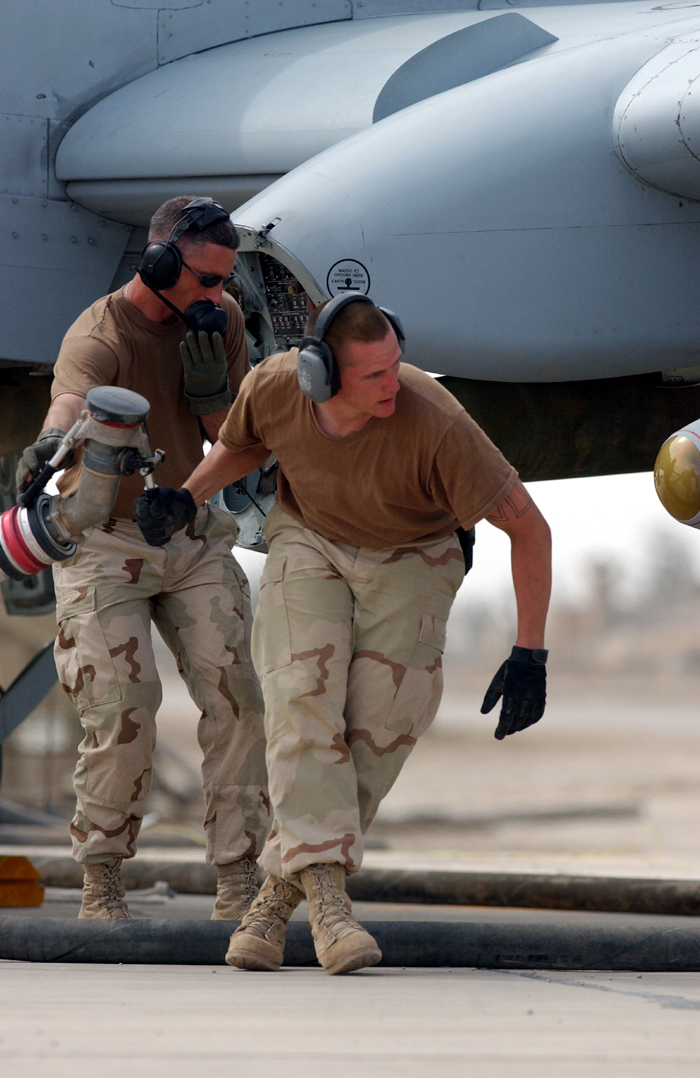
Thunderbolt fuel

OPERATION IRAQI FREEDOM -- Master Sgt. Kevin Bossaller (left) and Tech. Sgt. Dan Janssen completed refueling an A-10 Thunderbolt II at Tallil Air Base in southern Iraq on April 18. Officials here say this is the first A-10 hot refuel in Iraq and the first time the R-14 fuel hydrant system was used in the process. Bossallar is a crew chief, and Janssen is a fuel distribution supervisor. Both are assigned to the 442nd Fighter Wing from Whiteman Air Force Base, Mo.